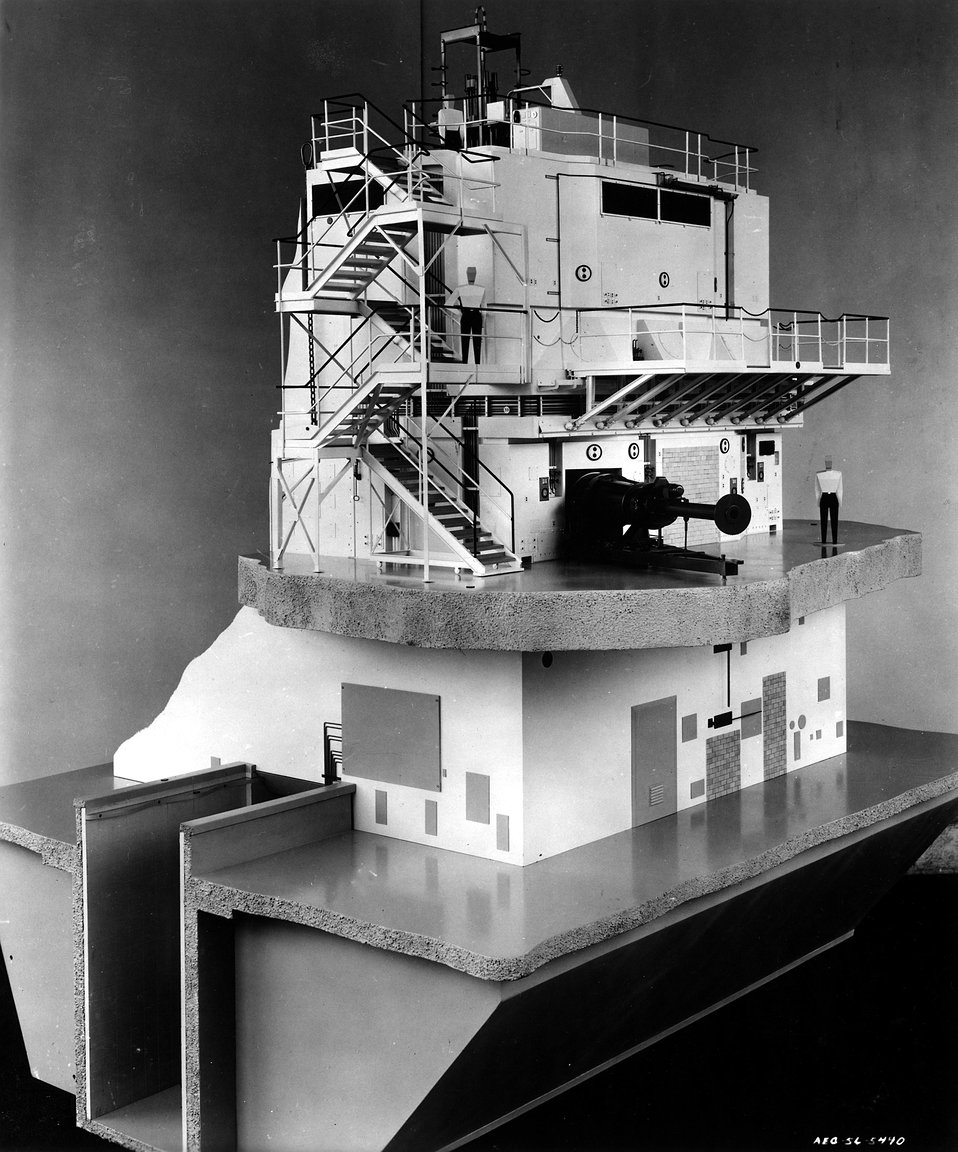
Model of the Materials Testing Reactor at the National Reactor Testing Station, Idaho. Circa 1956.